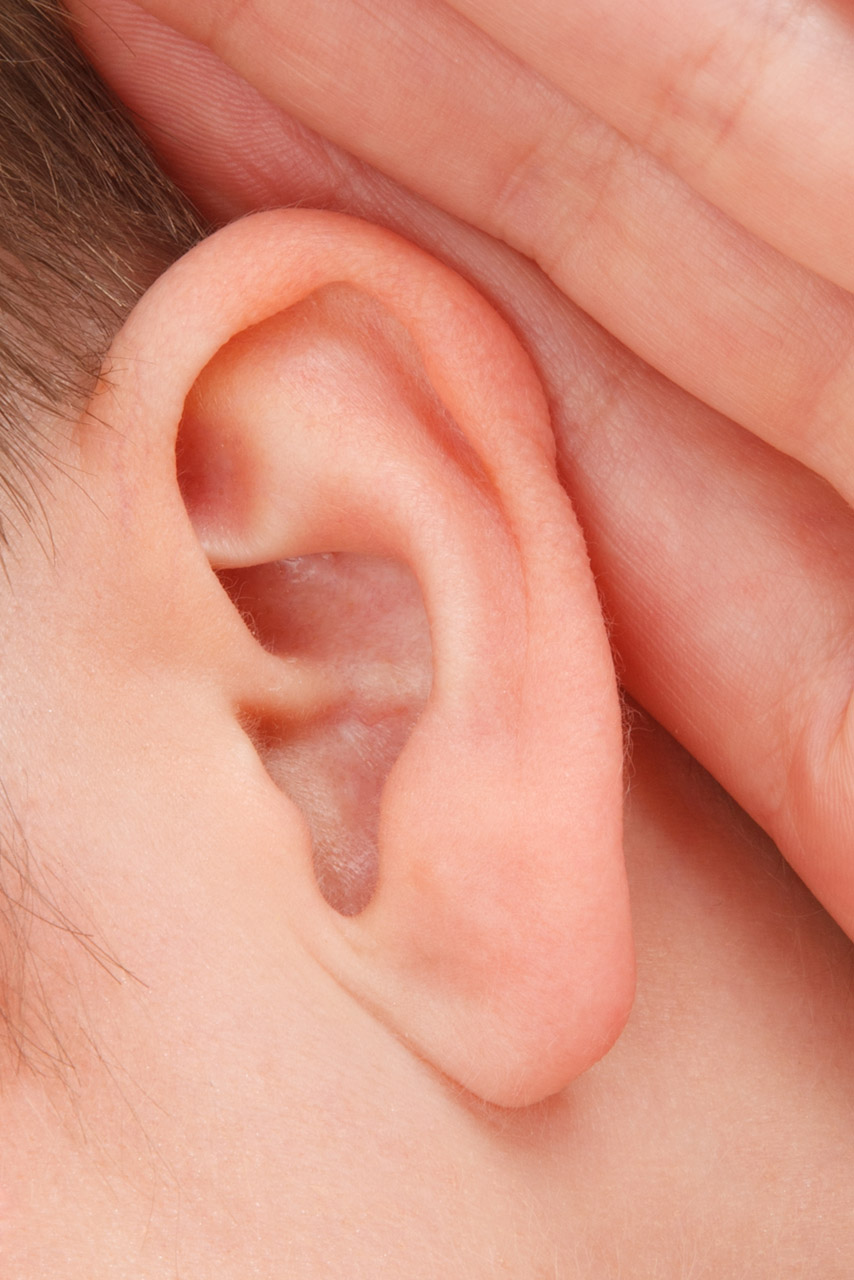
Listening ear

Closeup of a woman's ear with a hand.